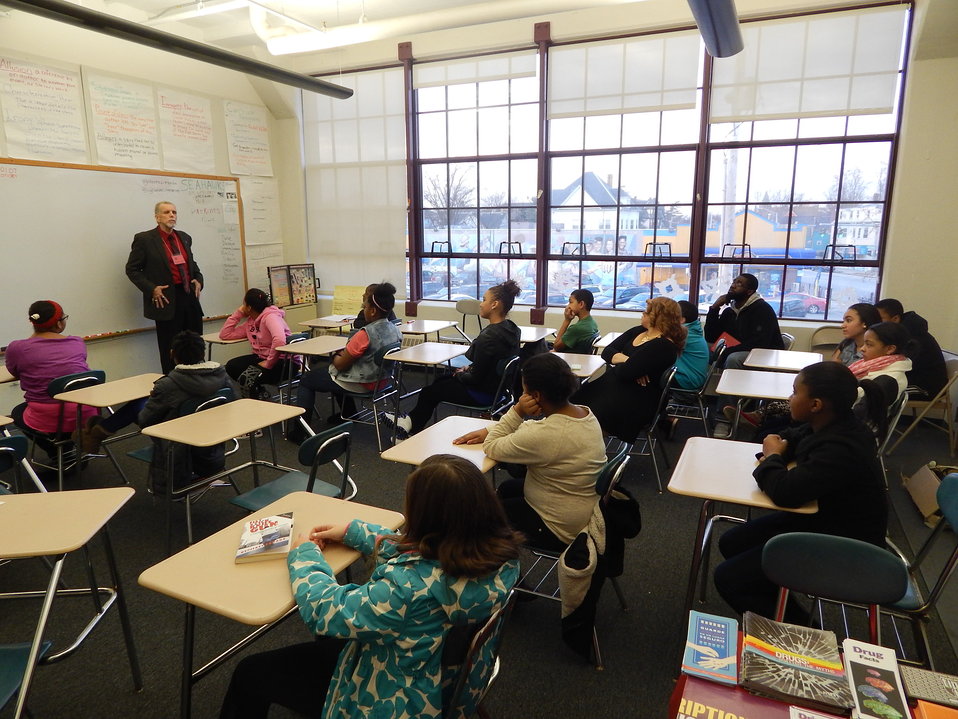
2014 NDFW Events in Rhode Island

100 students participated in the Substance Abuse Prevention Presentations at Highlander Charter School (HCS) and Bishop McVinney Middle School (BMMS) on January 31st, 2014 during National Drug Facts Week.